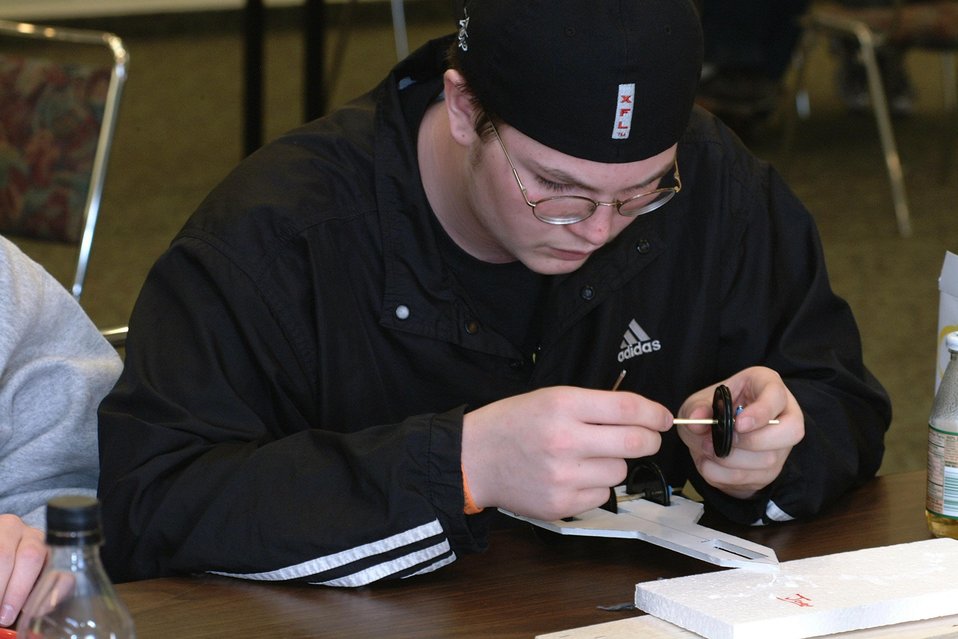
STUDENTS FROM MEMORIAL MIDDLE SCHOOL, ALBANY, OR, WORKING ON THE TEAM'S MODEL SOLAR CAR.

THE DEPARTMENT OF ENERGY SPONSORED THE FIRST NATIONAL MIDDLE SCHOOL SCIENCE BOWL ON MARCH 21-24, 2002 IN WASHINGTON, DC AT DOE HEADQUARTERS FORRESTAL BUILDING. ON MARCH 23RD THE COMPETITION INCLUDED A MODEL SOLAR CAR RACE HELD AT THE NATIONAL 4-H CONFERENCE CENTER, CHEVY CHASE, MD. THE MODEL CARS WERE DESIGNED AND CONSTRUCTED BY THE TEAM MEMBERS.